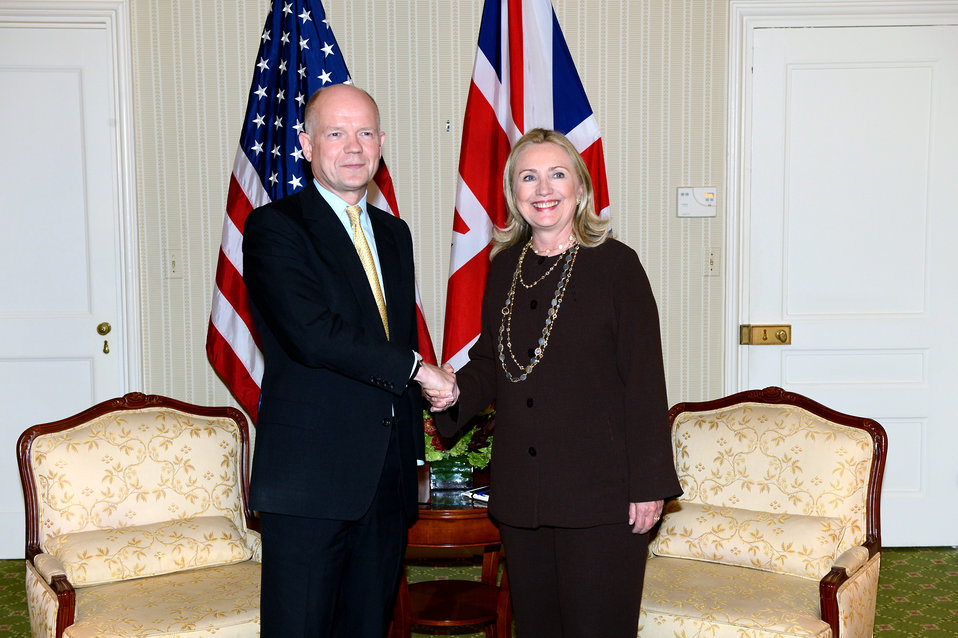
Secretary Clinton Meets With UK Foreign Secretary Hague

U.S. Secretary of State Hillary Rodham Clinton meets with UK Foreign Secretary William Hague in New York, New York on September 25, 2012.